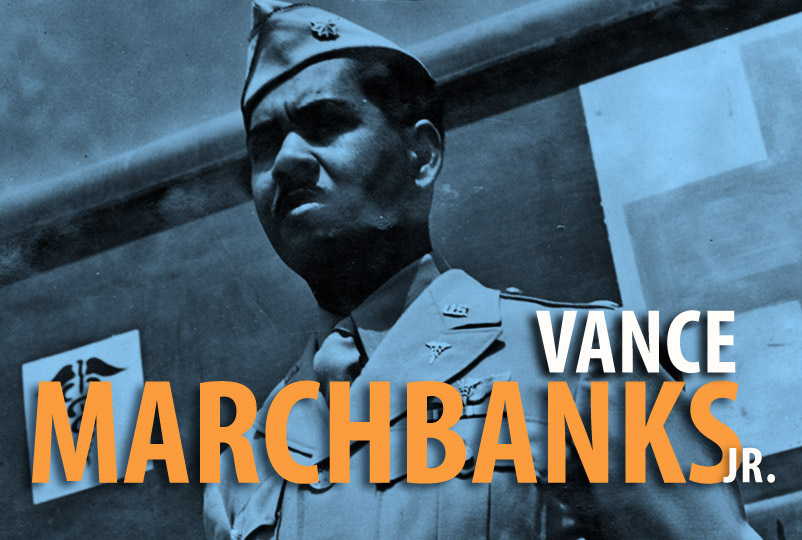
Vance Marchbanks Jr.